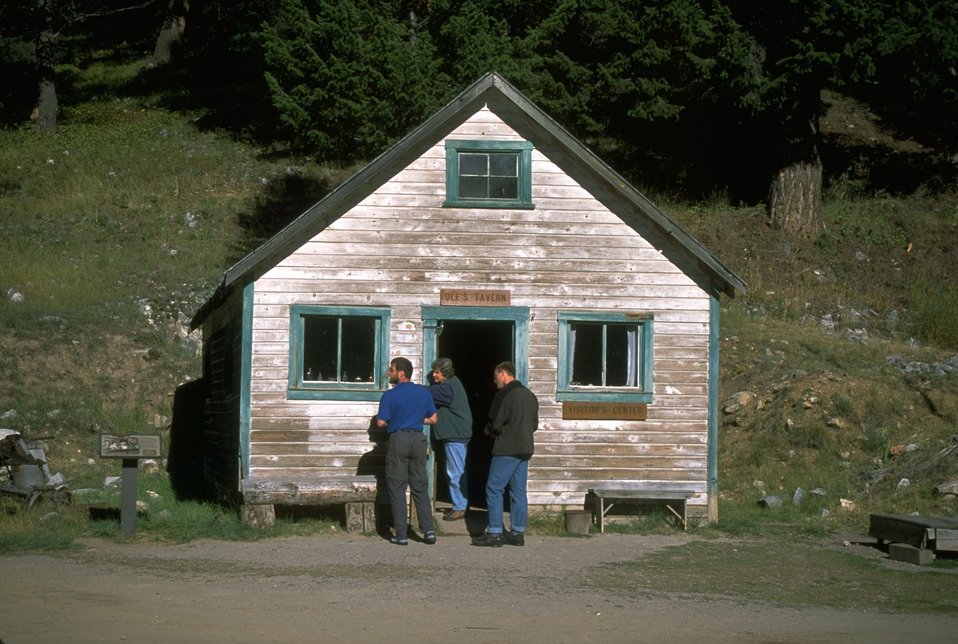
Ole's Tavern at Garnet Ghost Town